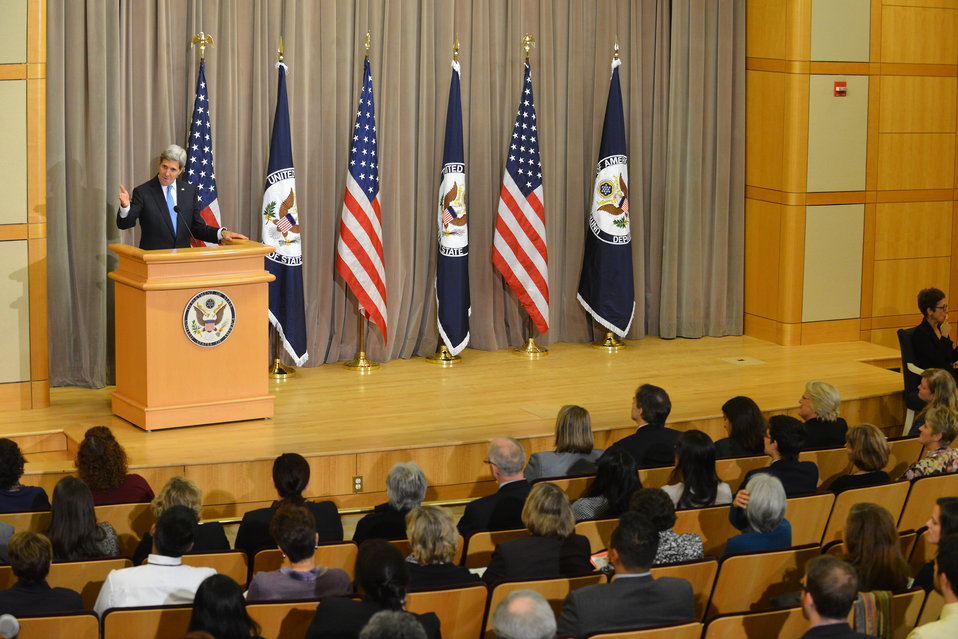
Secretary Kerry Delivers Remarks in Honor of National Work and Family Month

U.S. Secretary of State John Kerry delivers remarks at an event in honor of National Work and Family Month at the U.S. Department of State in Washington, D.C., on October 30, 2013.